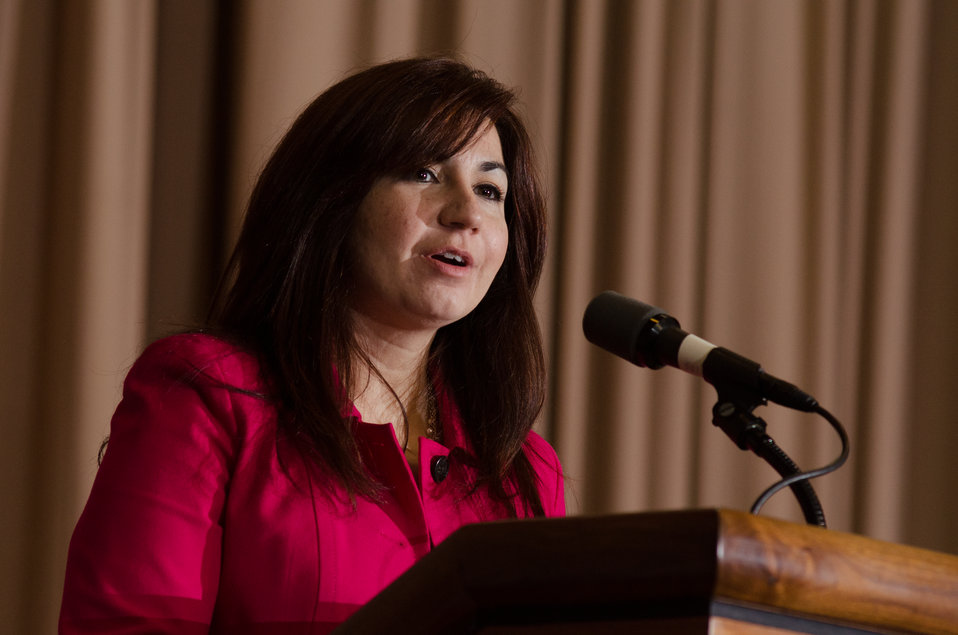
U.S. Department of Agriculture (USDA) Office of Human Resources Management, Office of Diversity and Inclusion, Director, Veronica Villalobos, presents opening remarks, during the 2013 National Hispanic Heritage Month ”Hispanics: Serving and Leading our Nation with Pride and Honor,” on Thursday, Sept. 19, 2013, in the Jefferson Auditorium, USDA Headquarters, Washington, D.C.